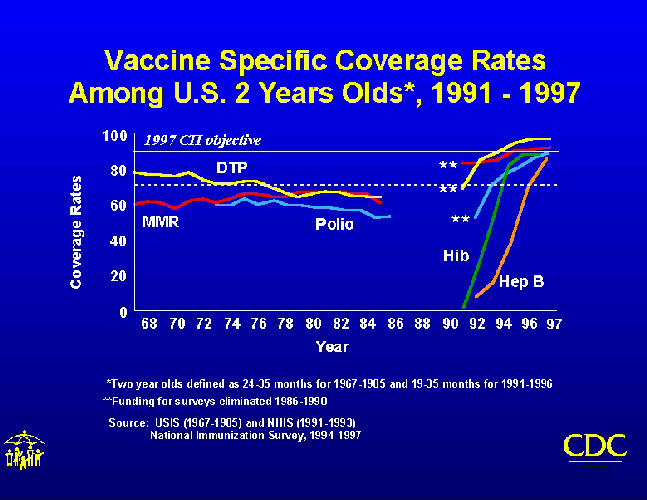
Vaccine specific coverage rates among U.S. 2 year olds, 1991-1997.